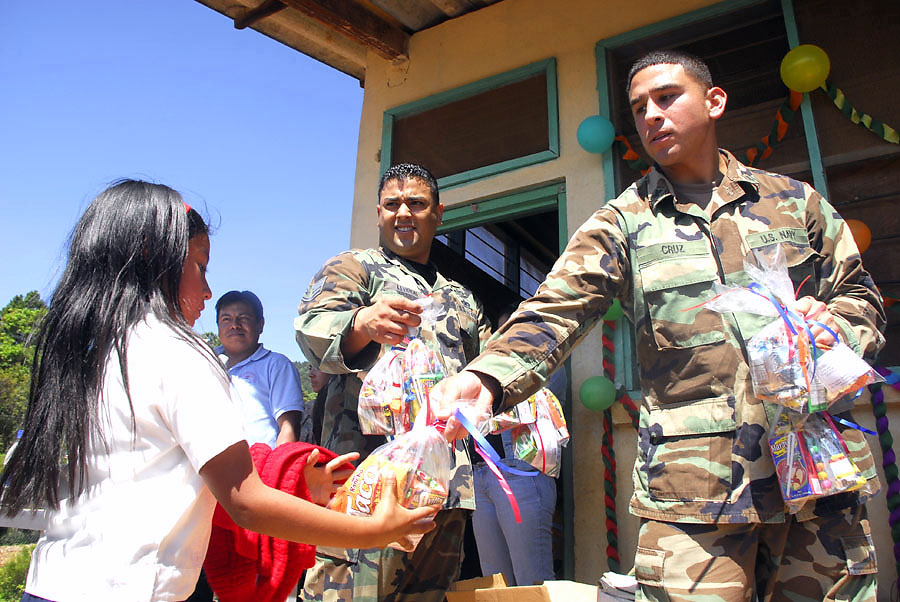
JTF Bravo participates in Honduras Children's Day

Staff Sgt. Edgardo Lebron (left) and Navy Petty Officer 2nd Class Miguel Cruz give out candy to children during Children's Day Sept. 10 in Guajiquiro, Honduras. More than 400 children in two towns spent time with servicemembers from JTF-Bravo. Sergeant Lebron and Petty Officer Cruz are from JTF-Bravo.